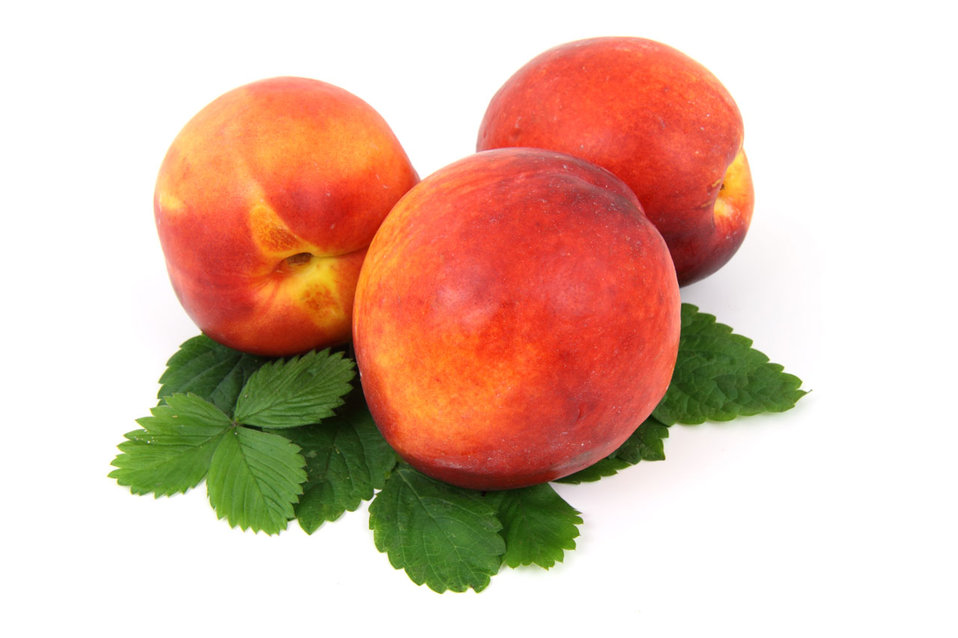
Nectarines

Three nectarines isolated on white background.